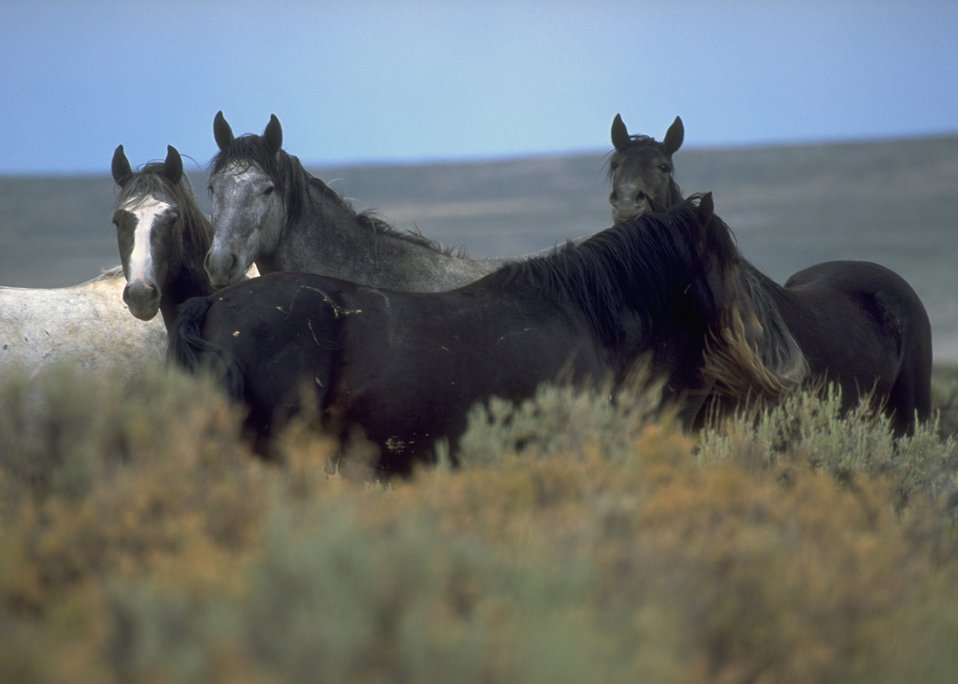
Wild horses, Rock Springs Field Office.